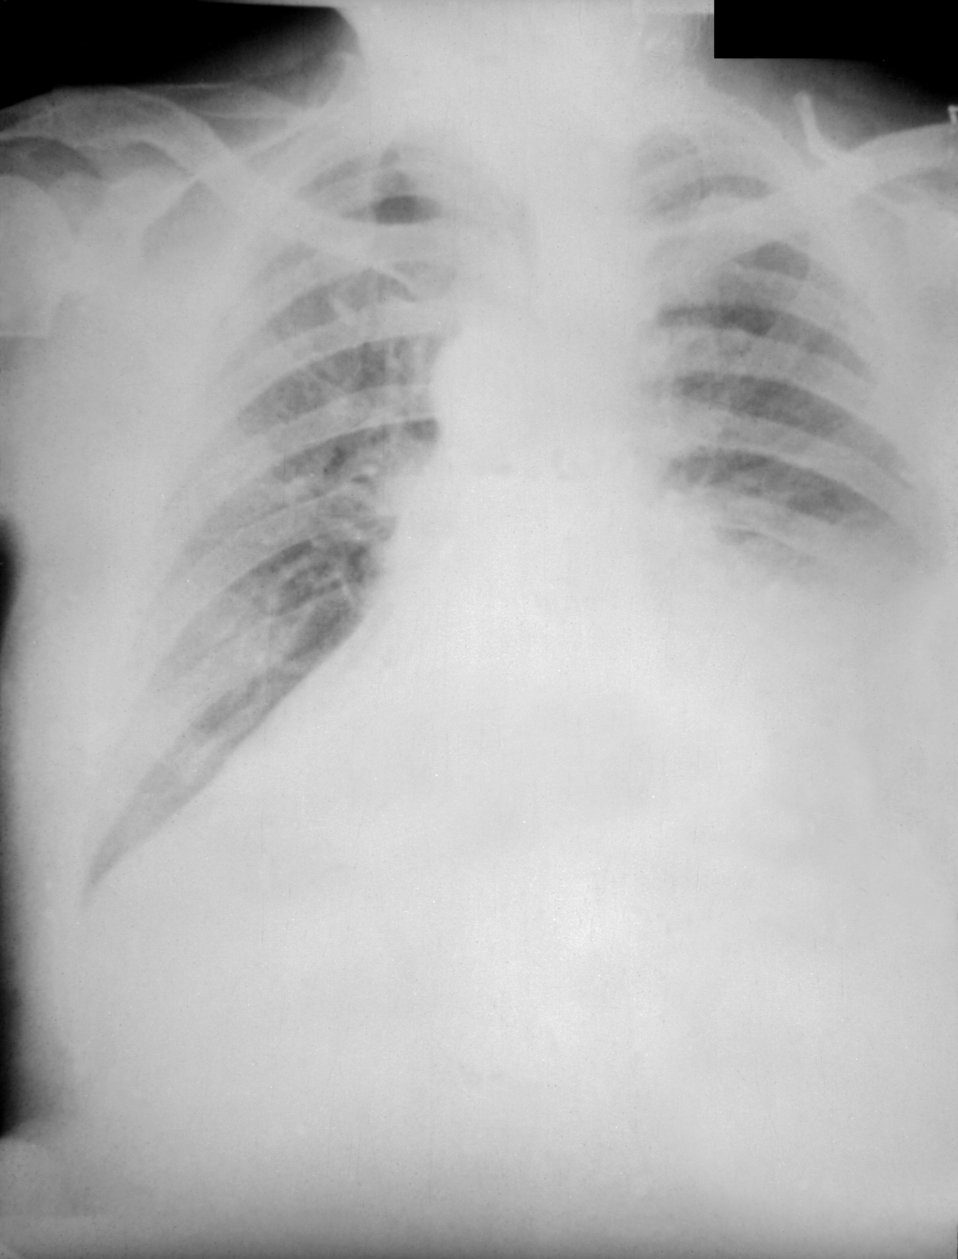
PA chest radiograph of anthrax, 4th day of illness.